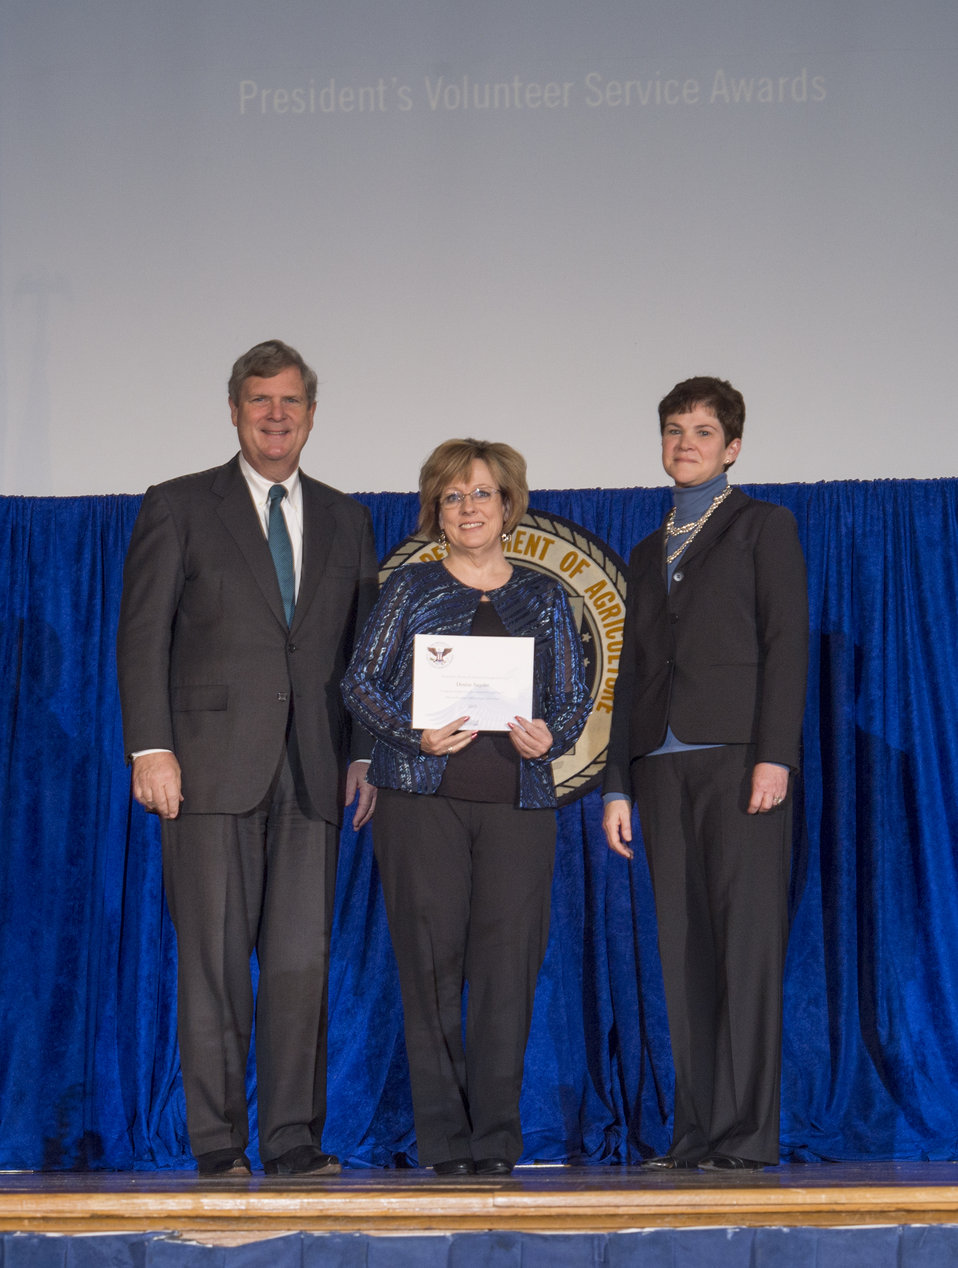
Agriculture Secretary Tom Vilsack and Agriculture Deputy Secretary Krysta Harden present the President’s Gold Volunteer Service Award to Denise Snyder at the 2013 Secretary's Honor Awards in the Jefferson Auditorium at the U.S. Department of Agriculture (USDA) in Washington, D.C. on Wednesday, Dec. 11, 2013. The President’s Gold Volunteer Service Award is given to an employee that has served 500 hours or more of service with a qualifying organization over the 12-month period beginning July 1, 2010, and ending June 30, 2011.